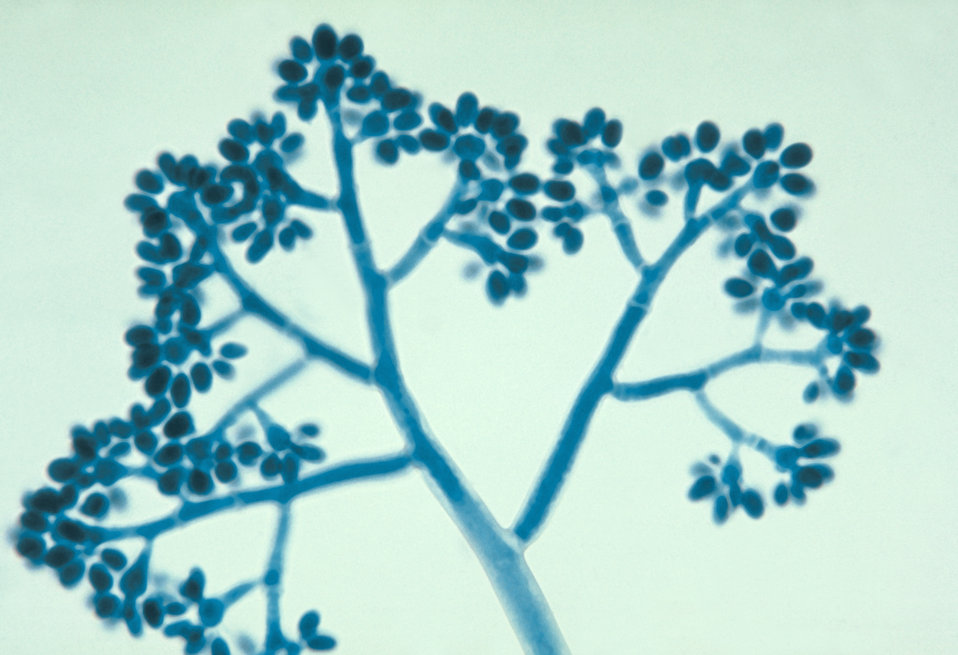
This photomicrograph shows a clusters of asexual spore-containing conidia of a Botrytis sp. fungus.